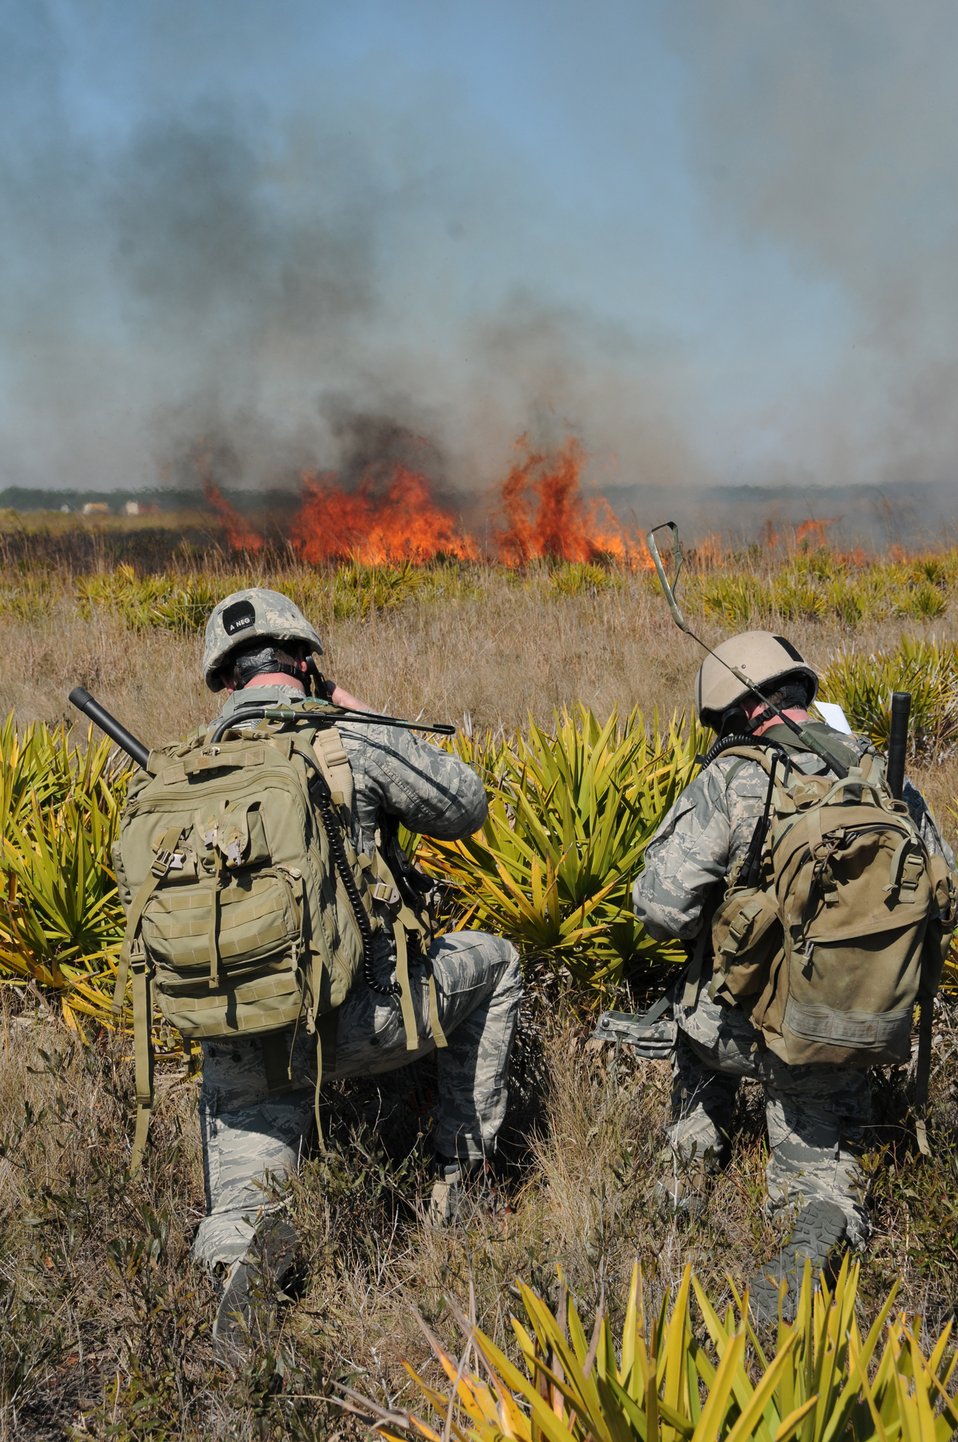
Atlantic Strike

Staff Sgt. Cody McNorton and Senior Airman Joseph Flynn call in information during exercise Atlantic Strike Feb. 15, 2011, at Avon Park Air Force Range, Fla. Atlantic Strike is a coalition air-to-ground training exercise that simulates a deployed environment. Sergeant McNorton and Airman Flynn are members of the 14th Air Support Operations Squadron.